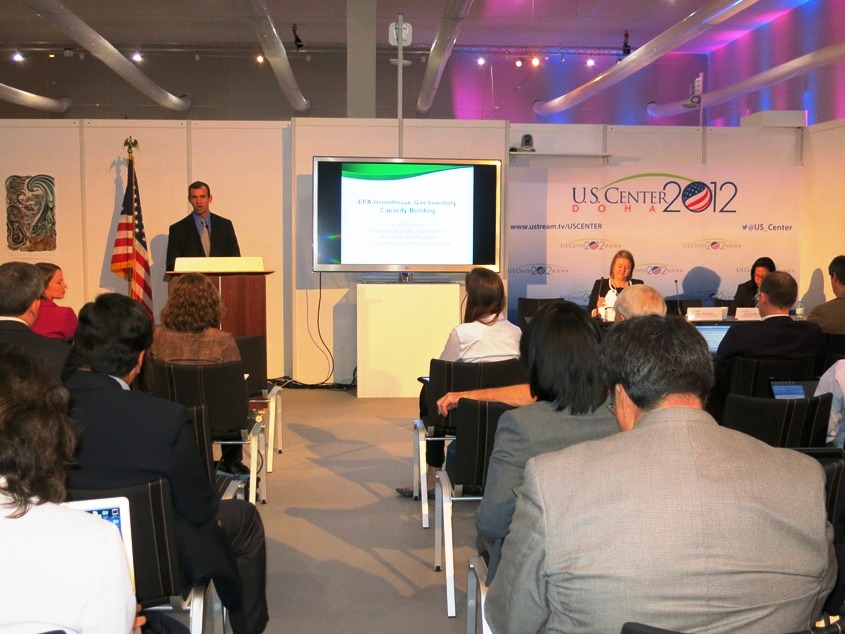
EPA's Beauvais Addresses the Audience

Senior Advisor in the Office of General Counsel for the Environmental Protection Agency (EPA) Joel Beauvais addresses the audience at the U.S. Center at the 18th Session of the Conference of the Parties to the UN Framework Convention on Climate Change (COP-18) in Doha, Qatar, November 29, 2012.